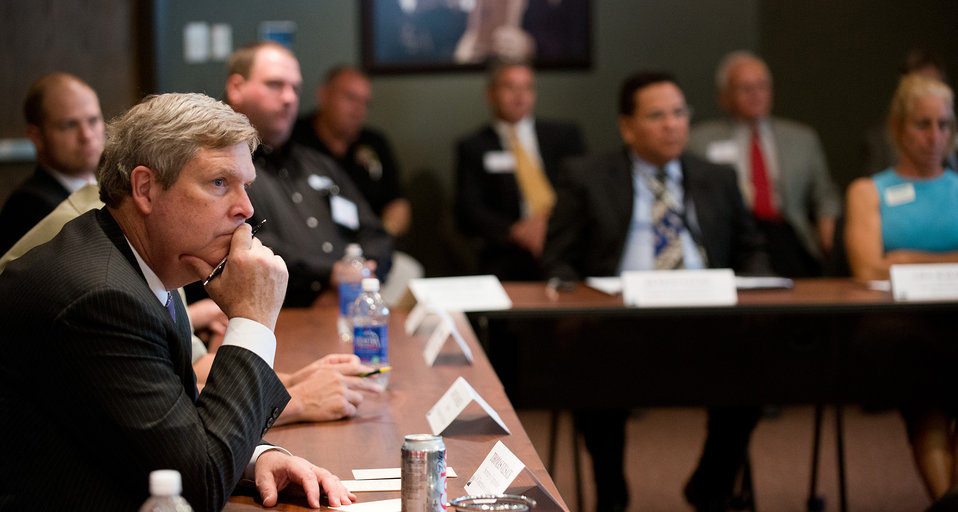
Agriculture Secretary Tom Vilsack participates at a round table discussion about Ohio Agriculture and the current drought conditions in Columbus, OH on Friday, August 3, 2012.